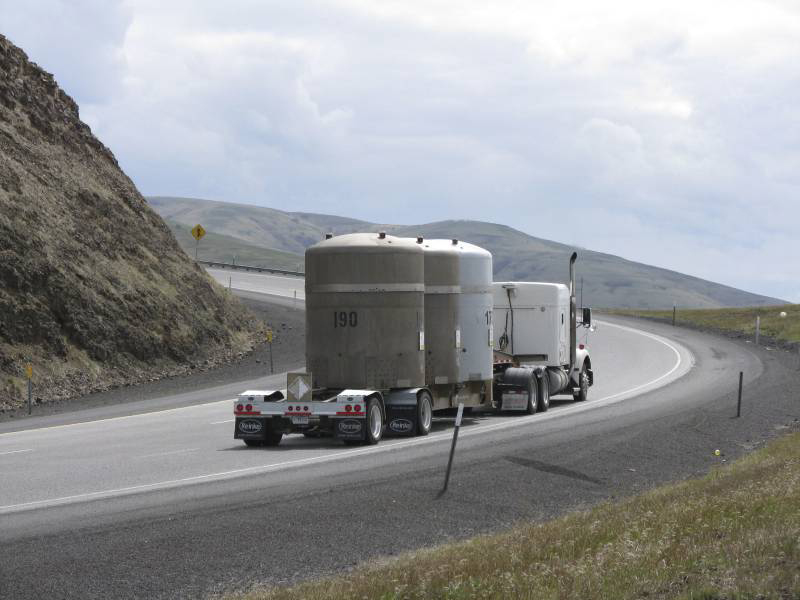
TOC Page Photo

A transuranic waste shipment travels on an approved shipping route to the Waste Isolation Pilot Plant.